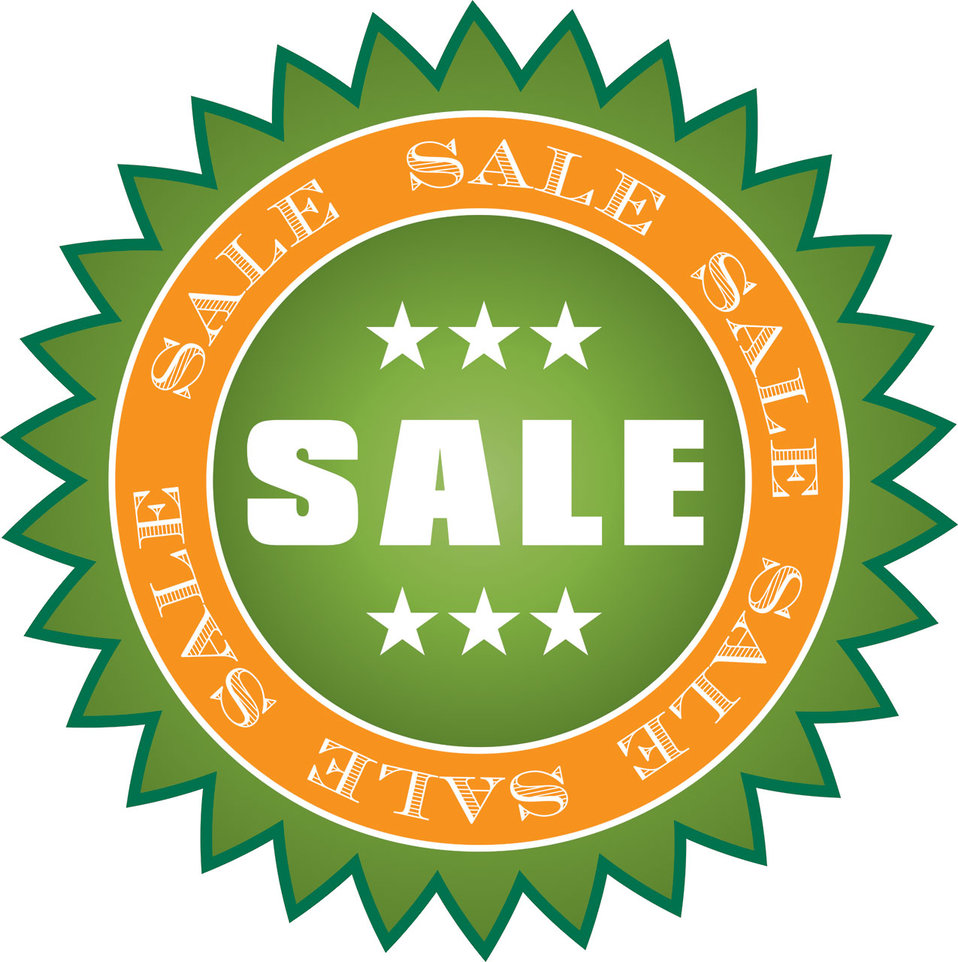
Sale sticker. also available in vector format at vectorportal.com.